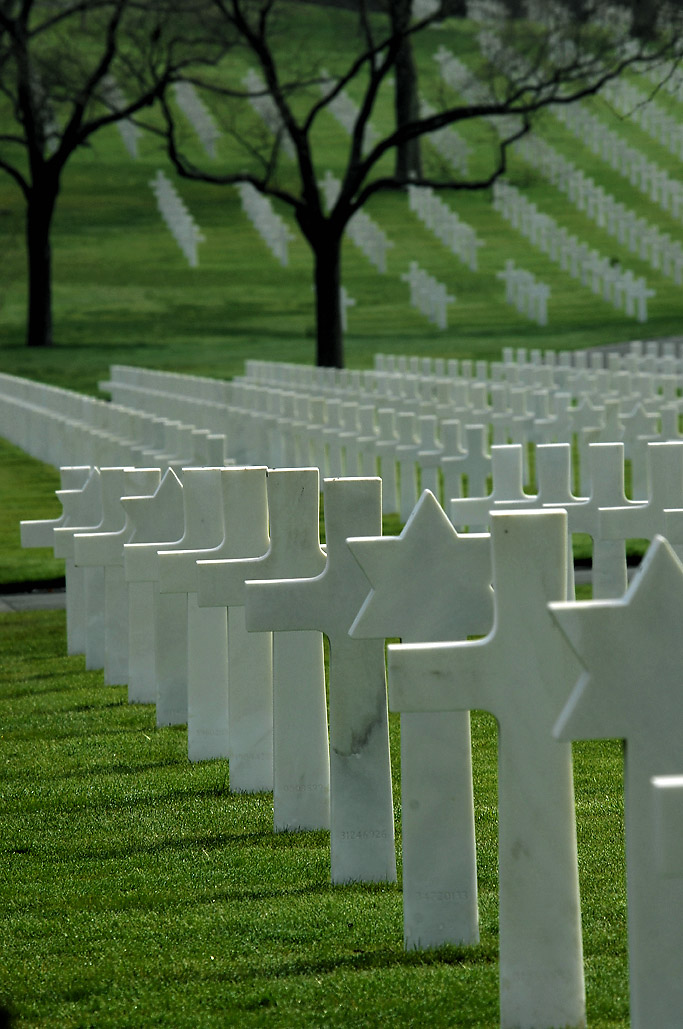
Airmen to visit World War II cemetery on Memorial Day

More than 10,000 Americans are buried at the Lorraine American Cemetery in St. Avold, France, where a memorial service takes place at 11 a.m. May 25.